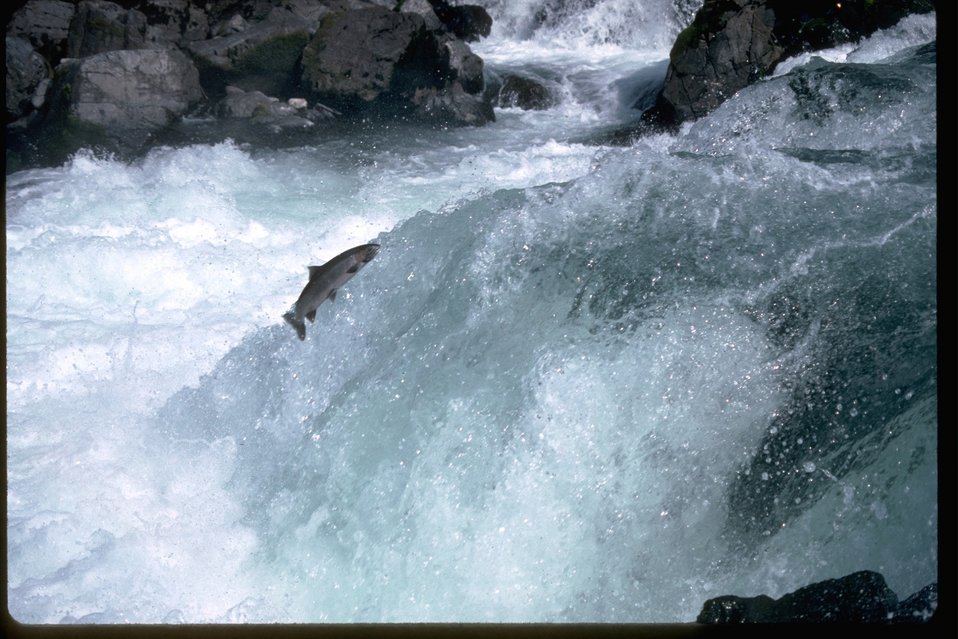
Salmon or Steelhead jumping up falls.